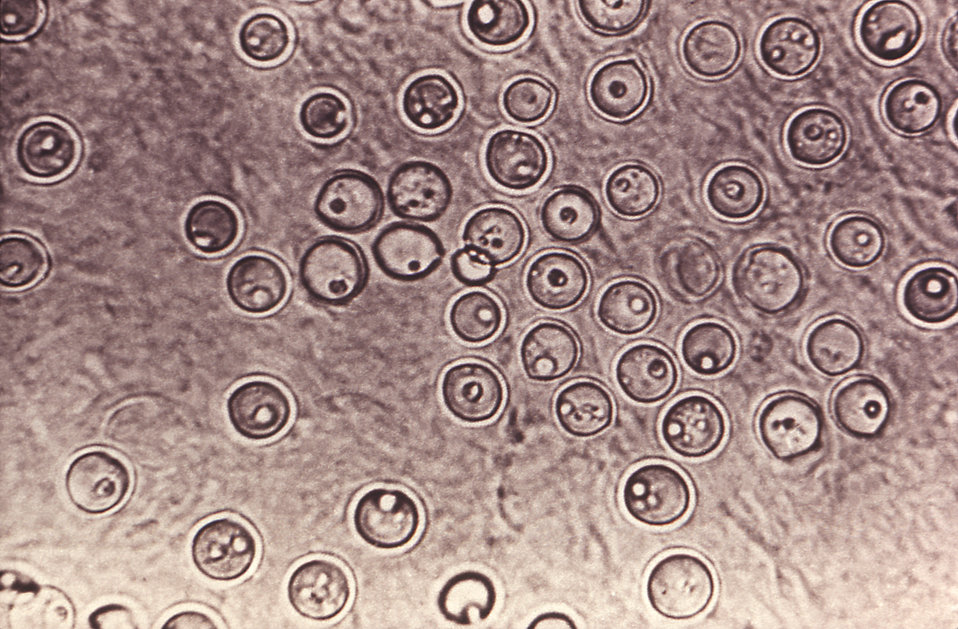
This photomicrograph reveals some of the ultrastructural histopathology in a tissue specimen from a patient with a keloidean blastomycosis infection, which was caused by the fungus, Blastomyces dermatitidis. The specimen originated from a sample of tissue scrapings. In this particular section note the abundance of large budding cells.